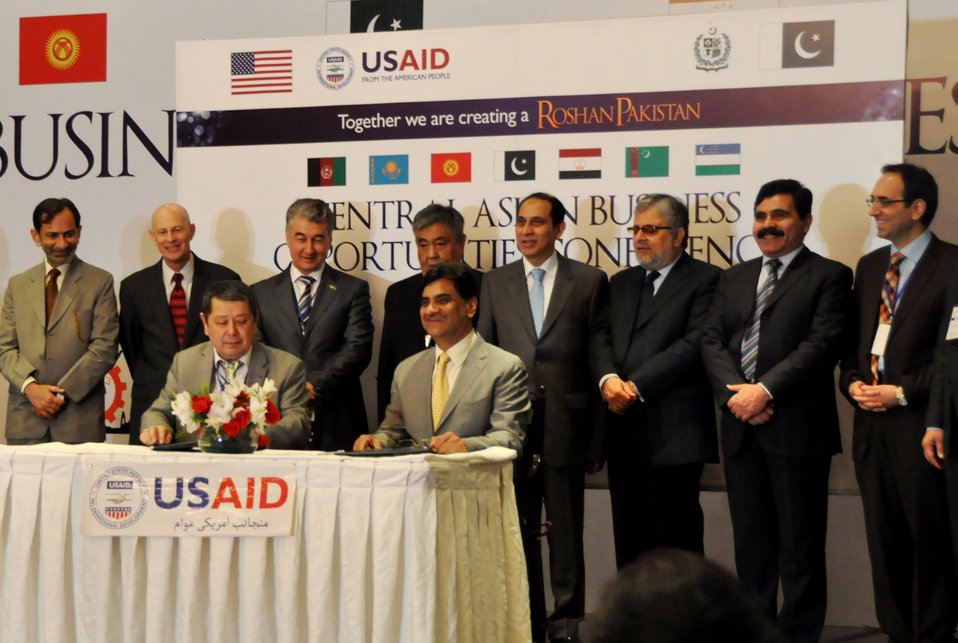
Central Asian Business Opportunities Conference

Signing ceremony of sixteen Memoranda of Understanding (MoUs) between Pakistan, Afghanistan and Central Asian businesses to promote regional trade and investment as a means to facilitate regional economic growth.